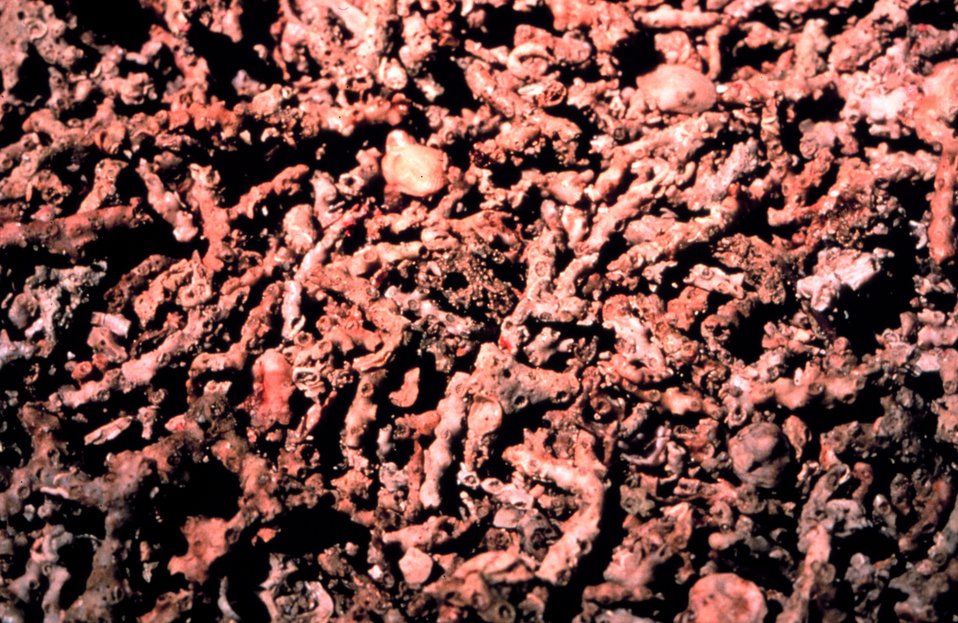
Oculina varicosa rubble destroyed by commercial fishing gear.